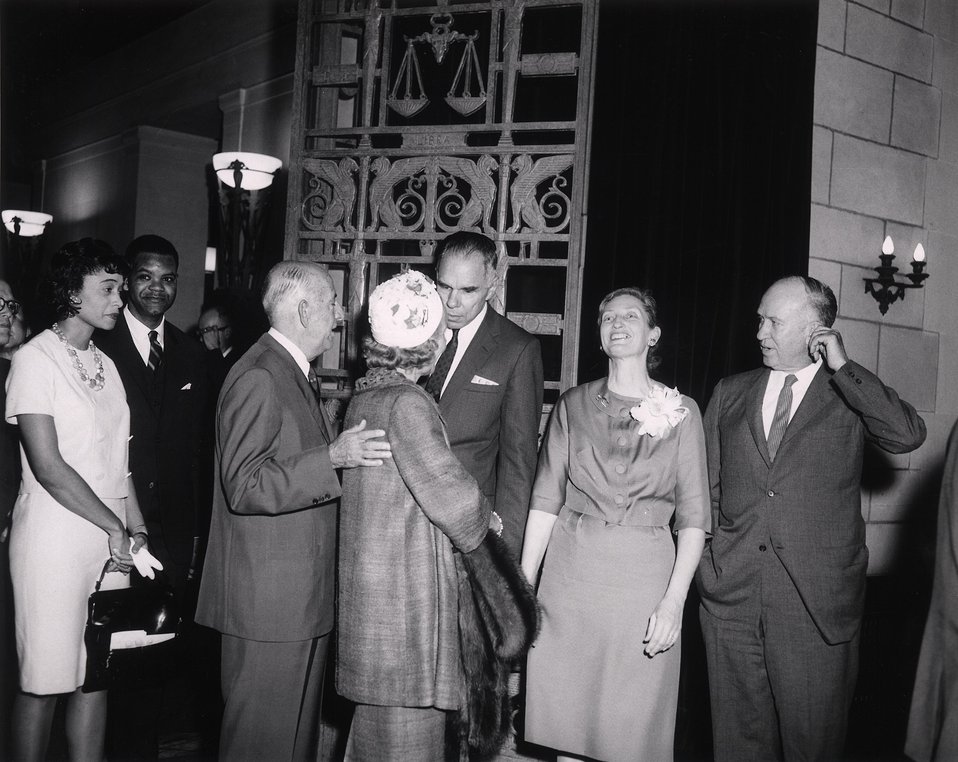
E. O . Lawrence Award Ceremony. National Academy of Sciences. April 29, 1965. Mr. and Mrs. Little, Mr. and Mrs. LeBaron, Dr. and Mrs. Seaborg, Dr. John Lawrence.